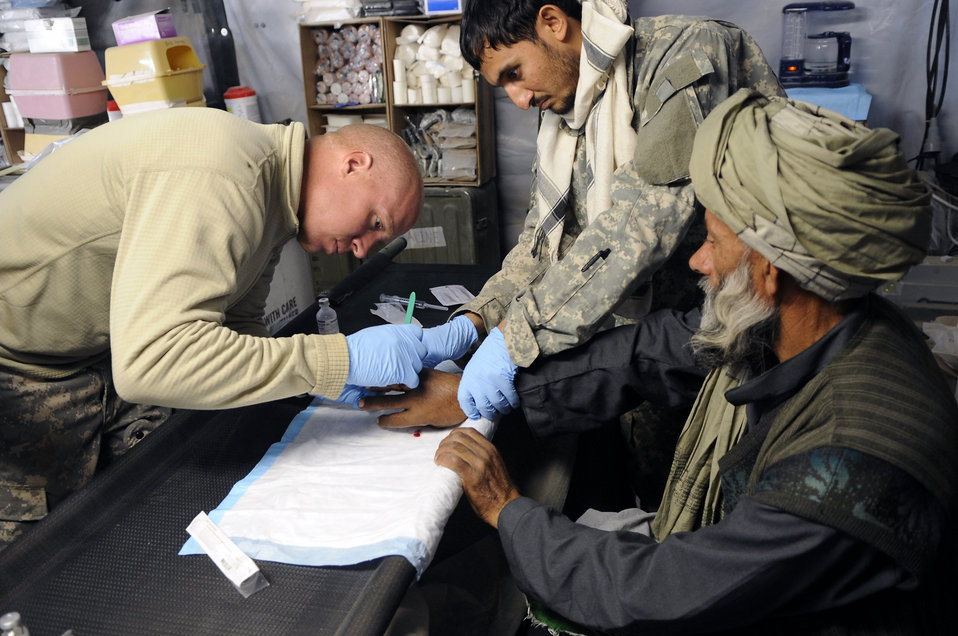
Ouch!

1st Lt. Shawn Allen (left) provides medical care to a villager Oct. 4 at Forward Operating Base Bala Murghab, Afghanistan. The International Security Assistance Force is assisting the Afghan government in exercising its authority across the country. Lieutenant Allen is an ISAF physician's assistant.